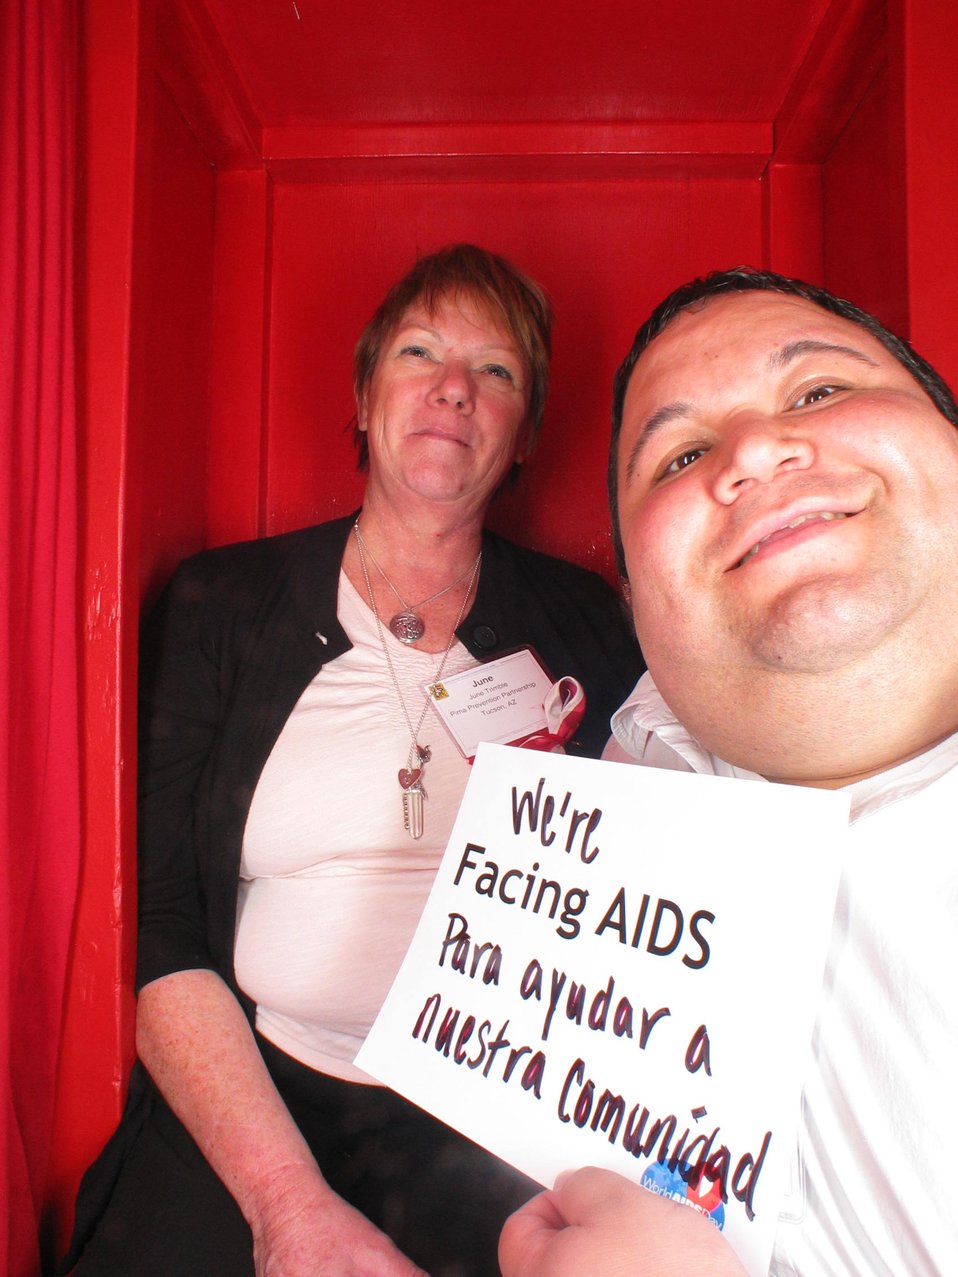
We're Facing AIDS para ayudar a nuestra comunidad.